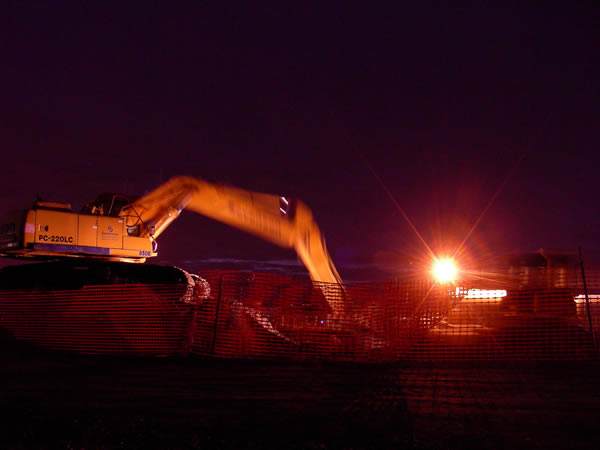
December 2009, Work crews continue into evening hours

In 2009, with the help of additional funding, the cleanup and dredging was able to operate from May into December, 6 days a week.